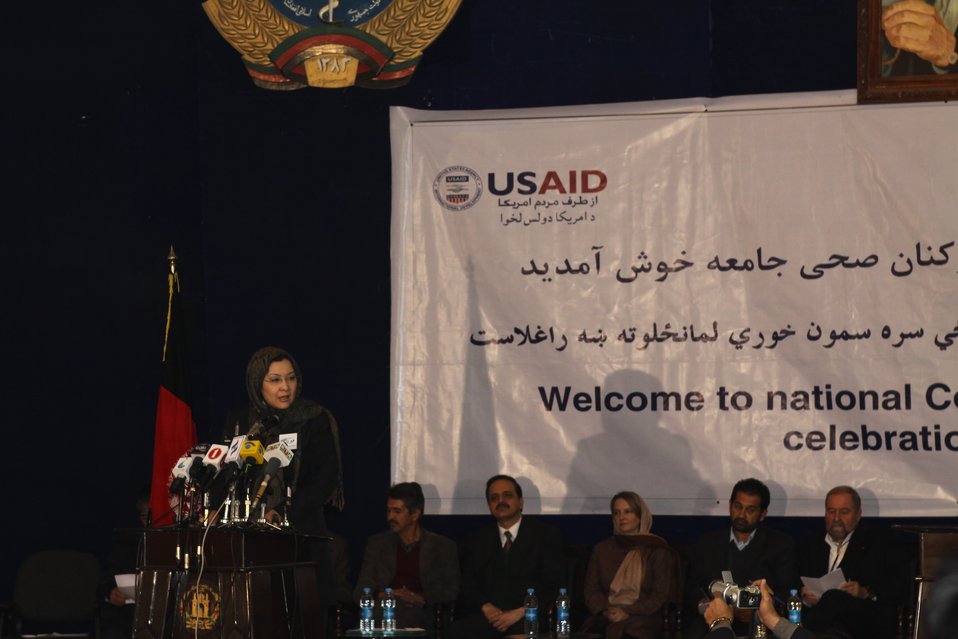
Community Health Workers Celebrated

Kabul, Afghanistan | December 5, 2010 — In support of the United Nations designated International Volunteer Day for Economic and Social Development, Afghanistan’s Ministry of Public Health celebrated its annual Community Health Worker Day today. Acting Minister of Public Health Dr. Suraya Dalil, USAID Senior Deputy Mission Director Robert Hellyer, other government officials, and international donors joined in recognizing the critical contribution of community health workers in Afghanistan and encouraging them to continue their voluntary support to their communities.
The event praised the contributions of the more than 22,000 volunteers throughout the country who deliver community level health-education, counseling, and services out of village health posts located in private homes. The Ministry of Public Health envisioned that community-based healthcare programs will actively encourage communities and families to adopt healthy lifestyles and behaviors, and provide families access to high quality and socially acceptable preventative medicine and life-saving services.
“We have 22,000 community health workers in Afghanistan that are able to implement the basic and standard medicines. They all have been trained through a job description,” said Minister Dalil. Addressing the health workers, she added, “I am proud and feel powerful that I have people like you.”
USAID-funded health projects collaborate closely with the Ministry of Public Health to improve the health and nutritional status of Afghans, provide quality primary healthcare, and promote healthy behaviors at the community and household-levels. USAID supported the training of more than 9,000 of the volunteer community health workers currently working in Afghanistan.
“On behalf of the American people, I congratulate the Community Health Workers for their diligence to gain the skills and knowledge necessary to serve their communities in this important role,” said USAID Senior Deputy Mission Director Hellyer. “USAID strongly supports community based health care and believes that quality community-based health services are essential to reaching Afghanistan’s Millennium Development Goals.”
To support the Basic Package of Health Services, USAID assisted in developing the community health worker training manual, helped train community health worker supervisors and master-trainers, facilitated in-service training, and produced and developed reporting tools, job aids, and education materials.